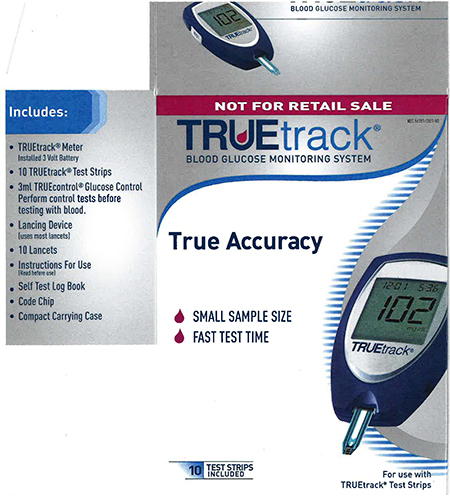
RECALLED – Blood Glucose Meters

January 2, 2014 – Product Recall – Nipro Diagnostics, Inc. Initiates Voluntary Recall of Certain TRUEbalance and TRUEtrack Blood Glucose Meters.